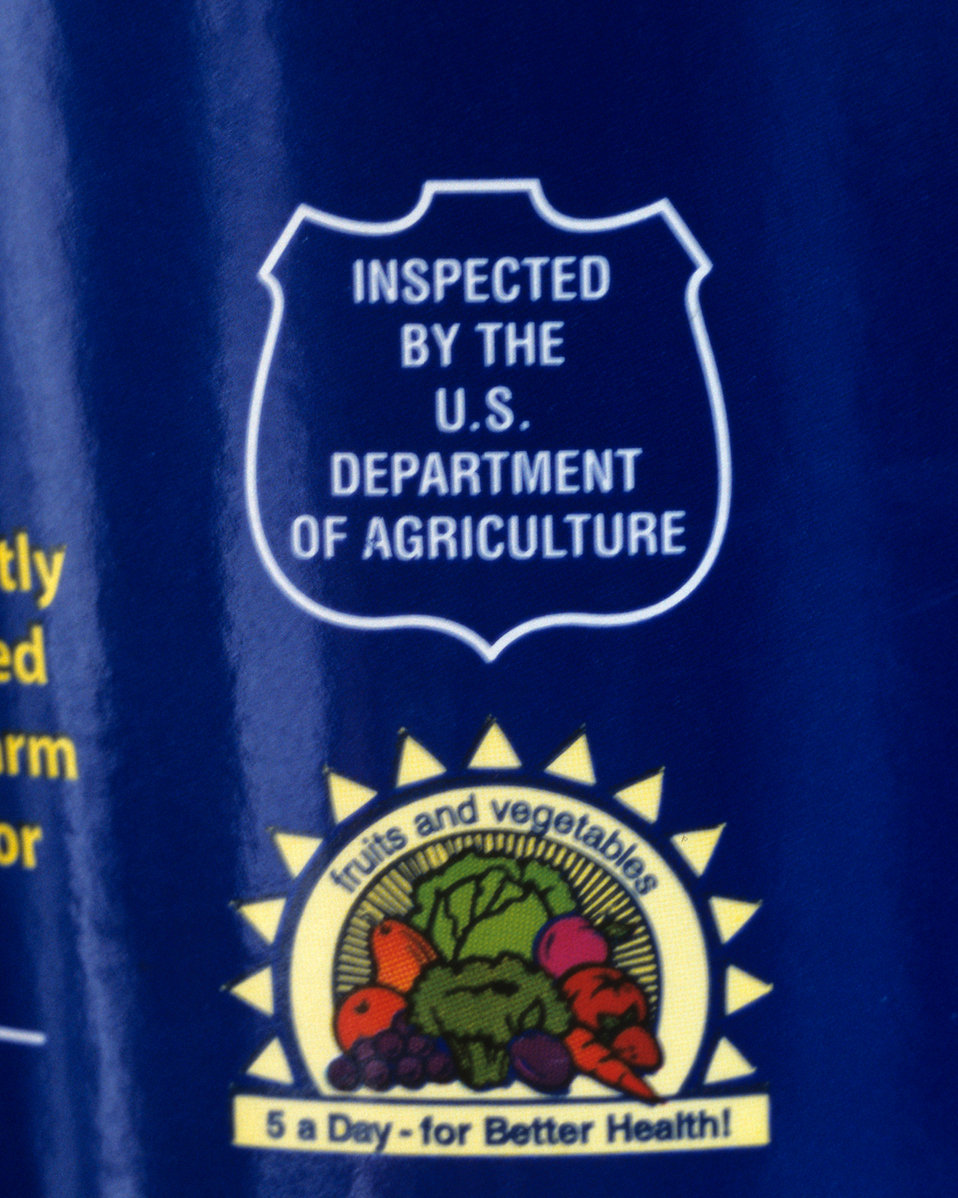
The U.S. Department of Agriculture (USDA) Agricultural Marketing Service (AMS) Processed Products Division offers a variety of resources that may be used to establish the quality of processed fruit, vegetables, and other related products. These resources broadly consist of the documents listed below. Voluntary U.S. grade standards are issued under the authority of the Agricultural Marketing Act of 1946, which provides for the development of official U.S. grades to designate different levels of quality. These grade standards are available for use by producers, suppliers, buyers, and consumers. As in the case of other standards for grades of processed fruits and vegetables, these standards are designed to facilitate orderly marketing by providing a convenient basis for buying and selling, for establishing quality control programs, and for determining loan values.